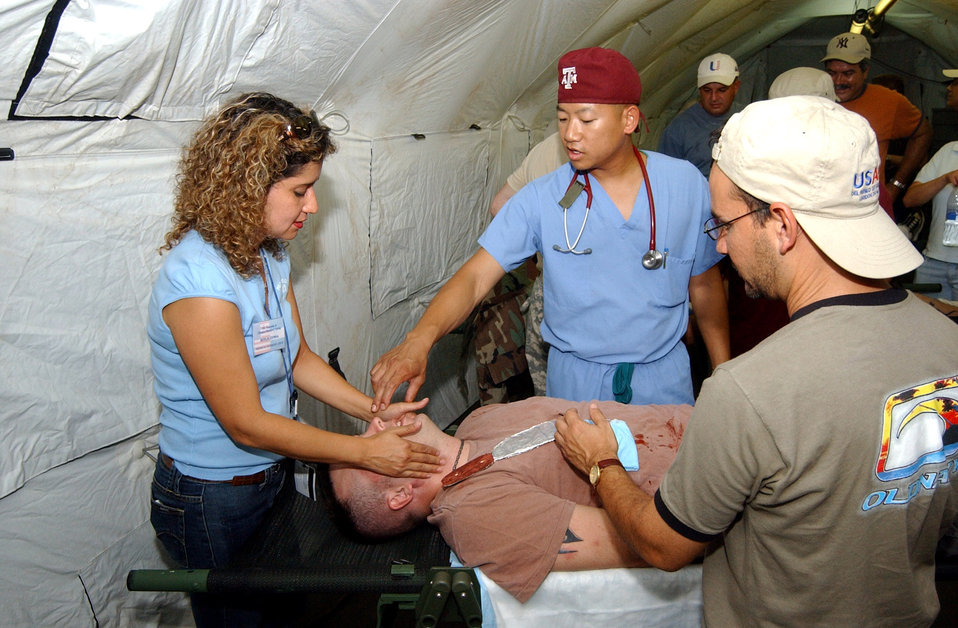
MEDEL offers readiness training to embassy, medical personnel

Army Capt. (Dr.) Hamilton Le explains the initial assessment of a simulated stabbing victim during a major accident response exercise at Soto Cano Air Base, Honduras. Thirty eight students attended the class, which provided training on first aid techniques and chemical, biological, radiological, nuclear, and explosive readiness training. Captain Le is a surgeon with the Joint Task Force-Bravo's Medical Element.